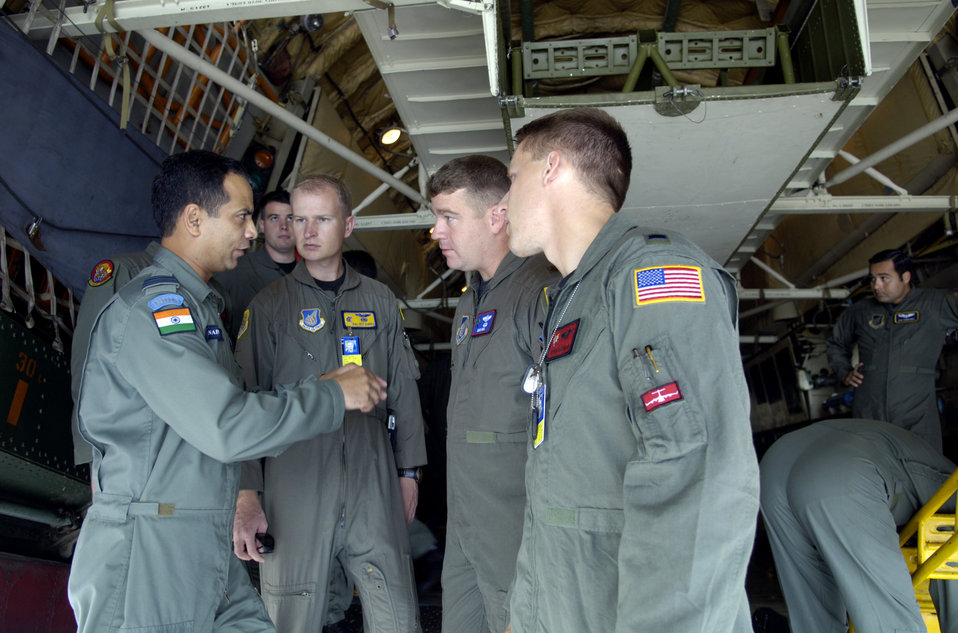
Airmen fly with Indian air force counterparts

Wing Commander P. Naiwal talks about the capabilities of the IL-76 medium cargo jet to Airmen from the 15th Airlift Wing at Hickam Air Force Base, Hawaii, Sept. 20. Wing Commander Naiwal is a pilot with the Indian air force.